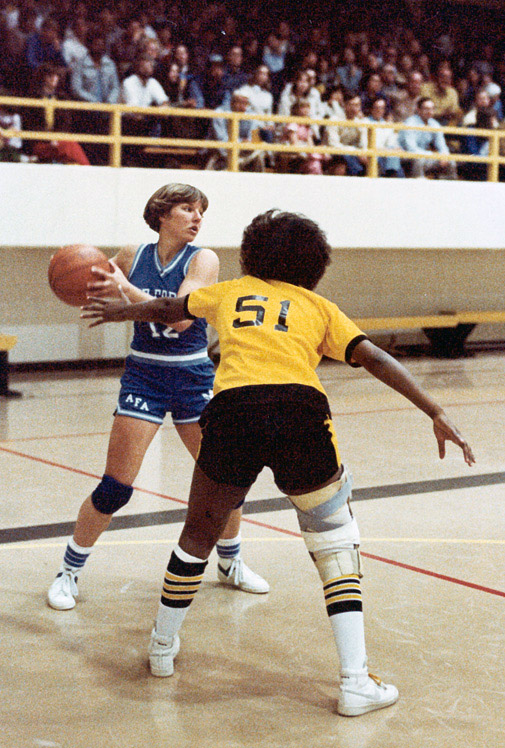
General speaks about mentorship at Women's Final Four

Brig. Gen. Michelle D. Johnson played on the Air Force Academy women's basketball team in the late '70s and early '80s. General Johnson is a 1981 Air Force Academy graduate and four-year letter winner on the women's basketball team. She holds the school records for career scoring average with 17.6 points per game and 689 career field goals made. She was the team co-captain in 1979 through 1981 and was an Academic All-American in 1980 and 1981. She was one of six people inducted into the inaugural class of the Academy's Athletic Hall of Fame. General Johnson is currently the deputy director for the war on terrorism in the Strategic Plans and Policy Directorate of the Joint Staff.